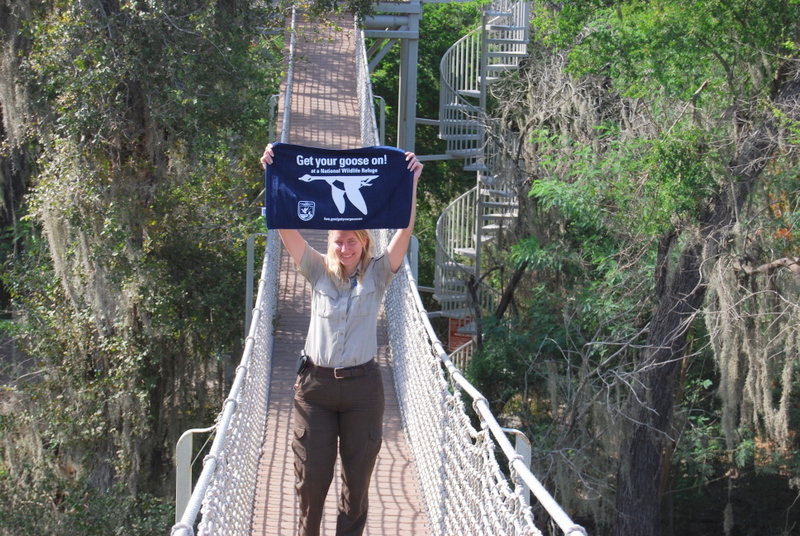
Get Your Goose On!

Santa Ana National Wildlife Refuge Manager on the canopy walk between the two 25-foot towers at the refuge.